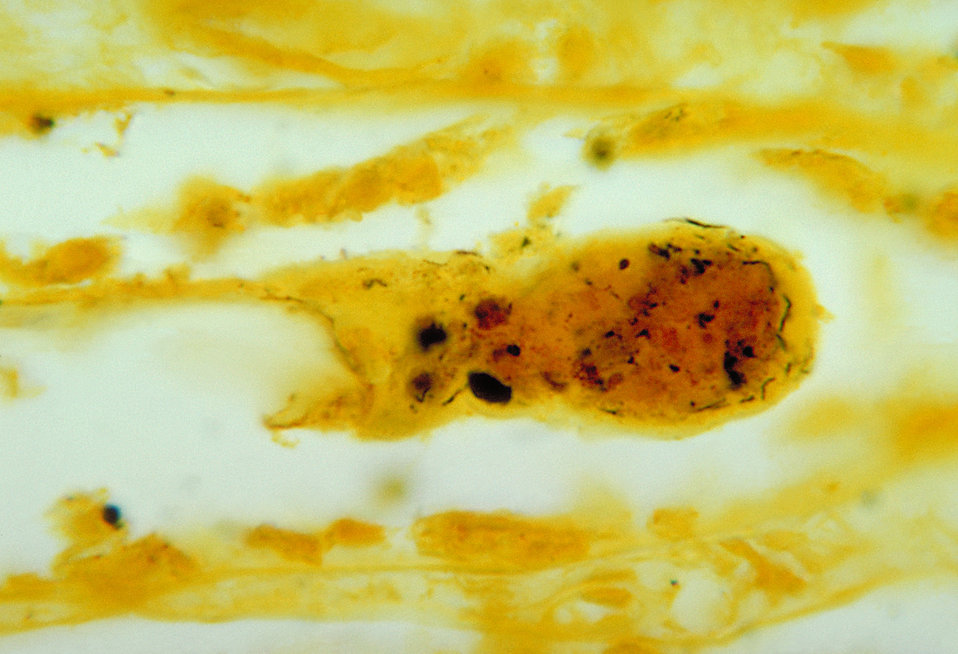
Photomicrograph of kidney tissue, using a silver staining technique, revealing the presence of Leptospira bacteria.